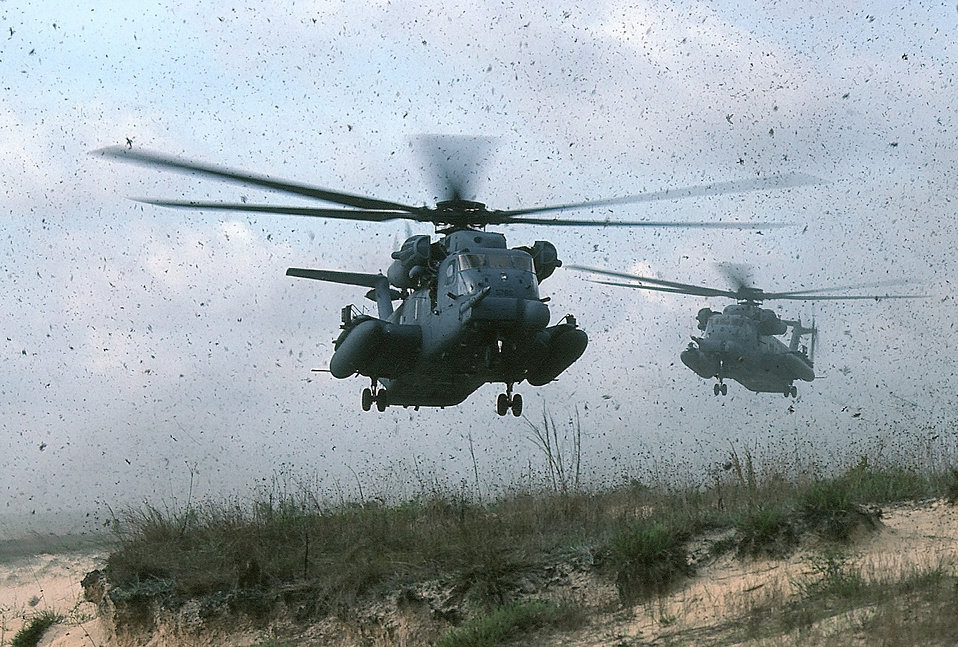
20th SOS

FILE PHOTO --The 20th Special Operations Squadron, located at Hurlburt Field, Fla., is one of eight flying squadrons within the 16th Special Operations Wing. Known as the